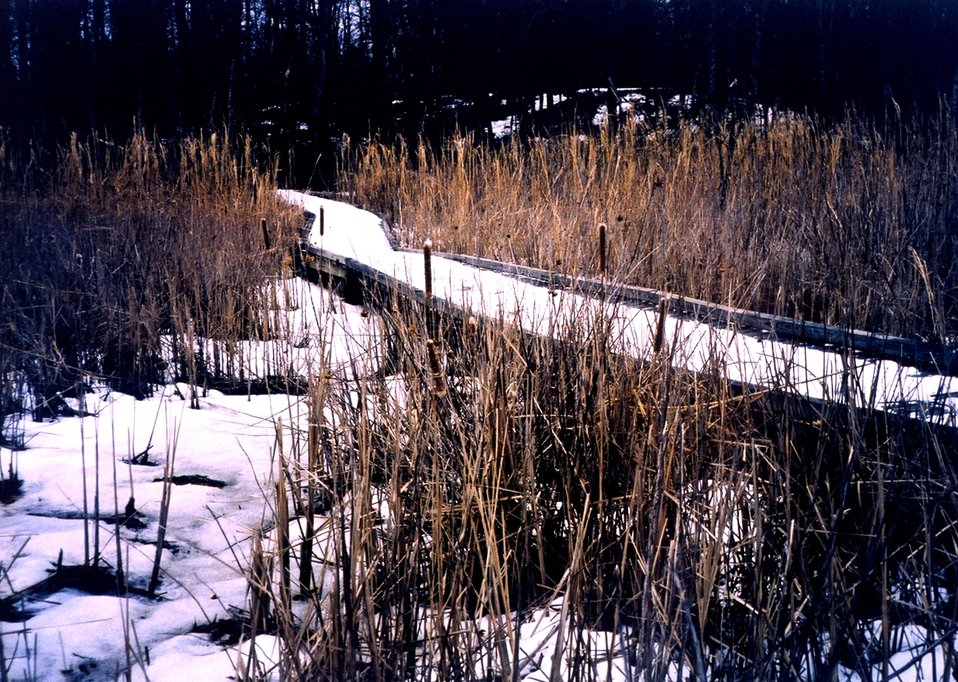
Snow in the marsh.